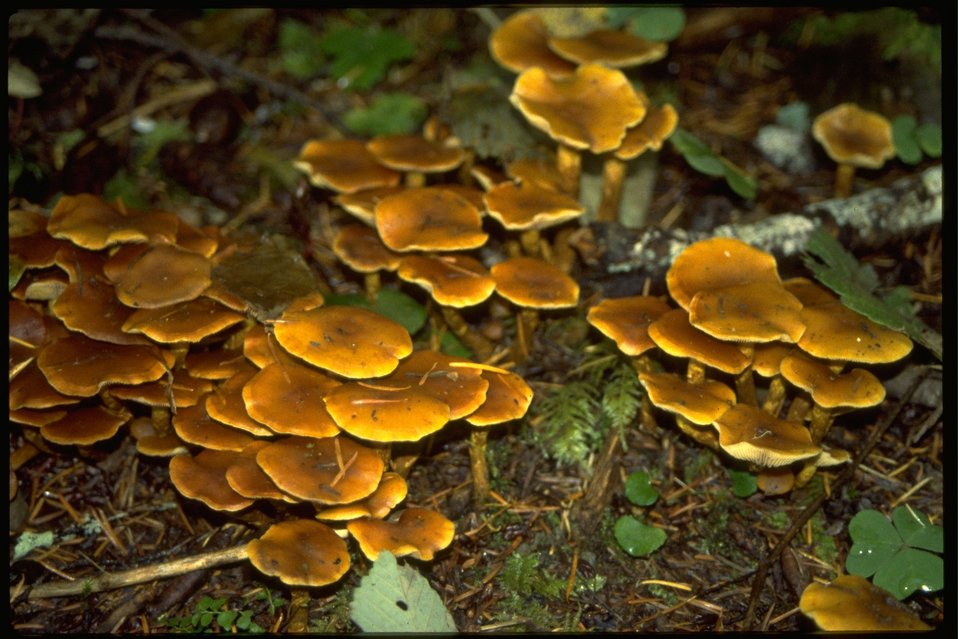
Fungi